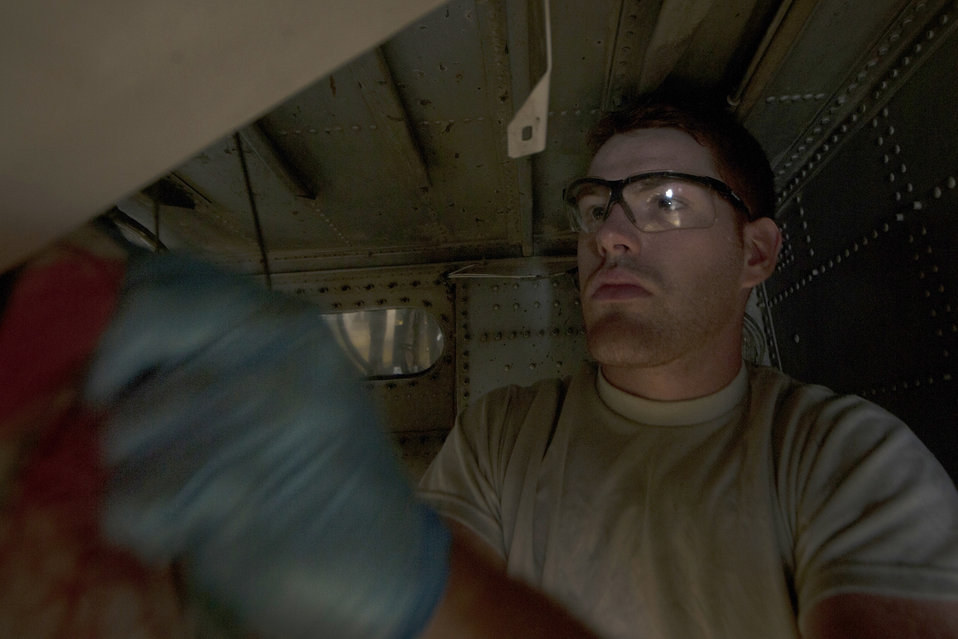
Inspection at Moody

Senior Airman David Johnson loosens the hydraulic system of an HC-130P Combat King before replacing old filters June 20 2011, during an inspection at Moody Air Force Base, Ga. Airman Johnson is a hydraulics inspection specialist assigned to the 23rd Component Maintenance Squadron.